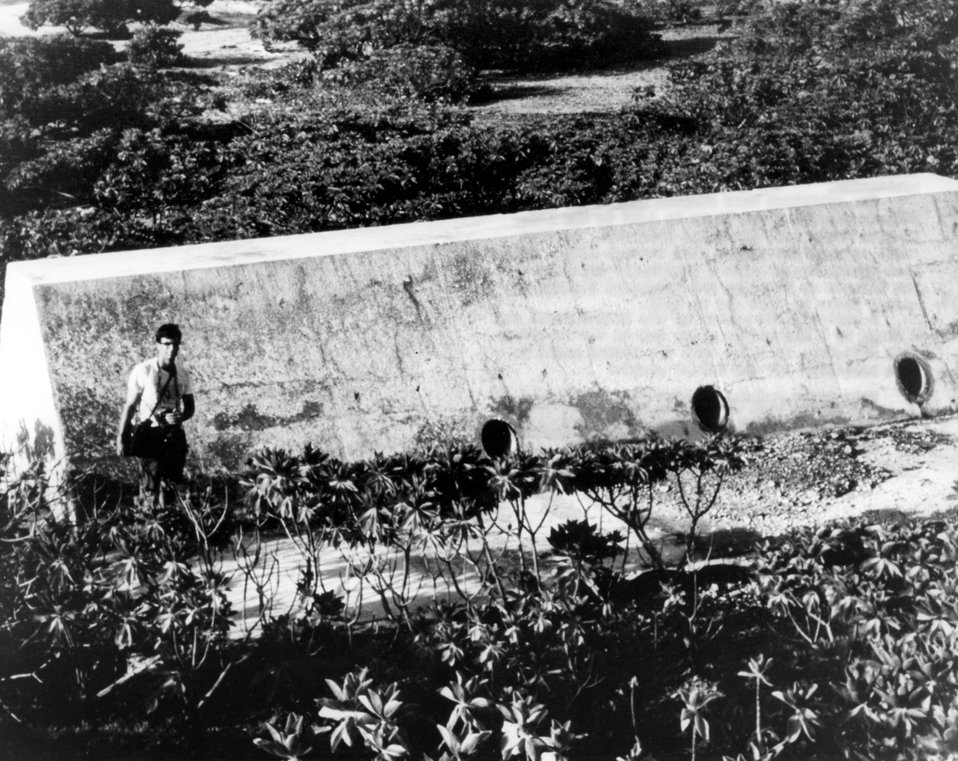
Ten years after last nuclear testing on Bikini Islands, inhabitants allowed to return.
c.1969